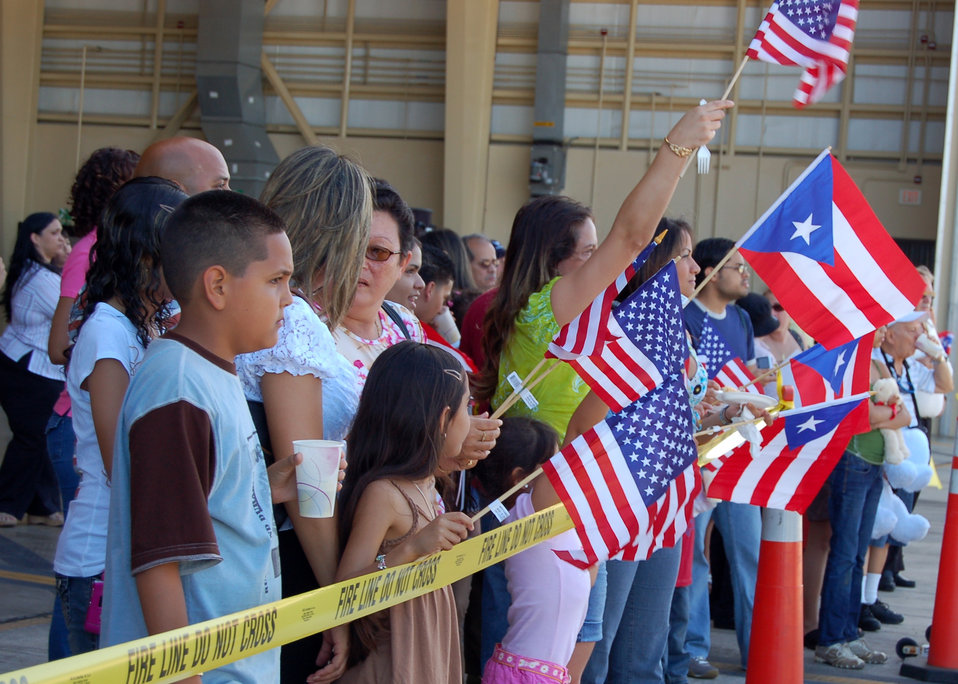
Buccaneers Return Home

Family, friends and coworkers welcome home 26 members of the 198th Airlift Squadron on their return home to Mu?iz Air National Guard Base, Puerto Rico, Dec. 16. The unit returned from a deployment to Bagram Air Base, Afghanistan. The unit is part of the 156th Airlift Wing of the Puerto Rico Air National Guard.